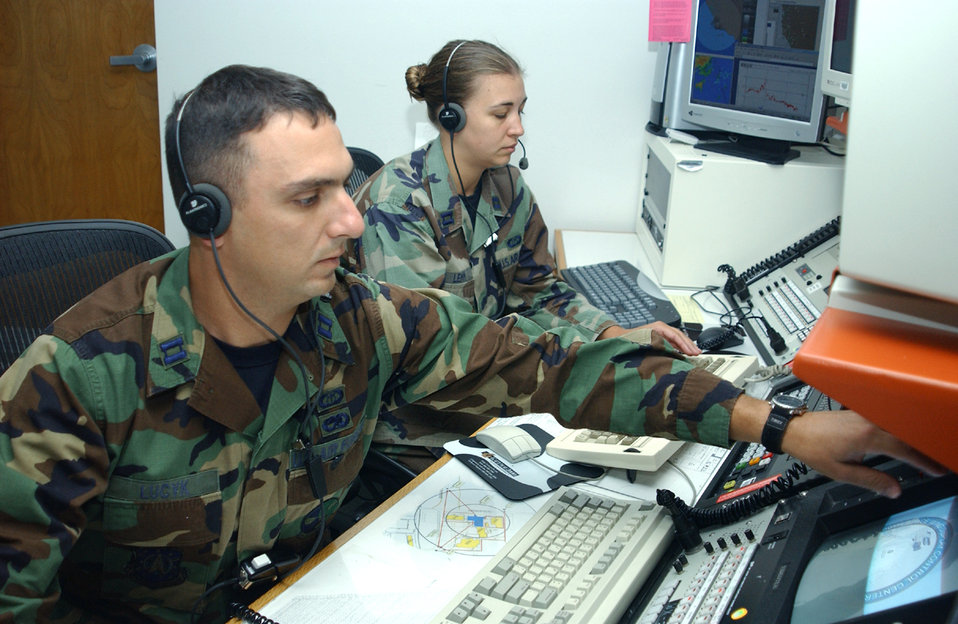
Rocket science

VANDENBERG AIR FORCE BASE, Calif. --Capts. Paul Lucyk (left) and Breea Lemm perform simulated duties while preparing for upcoming missile or rocket launches here. Both captains are assigned to the 30th Weather Squadron.